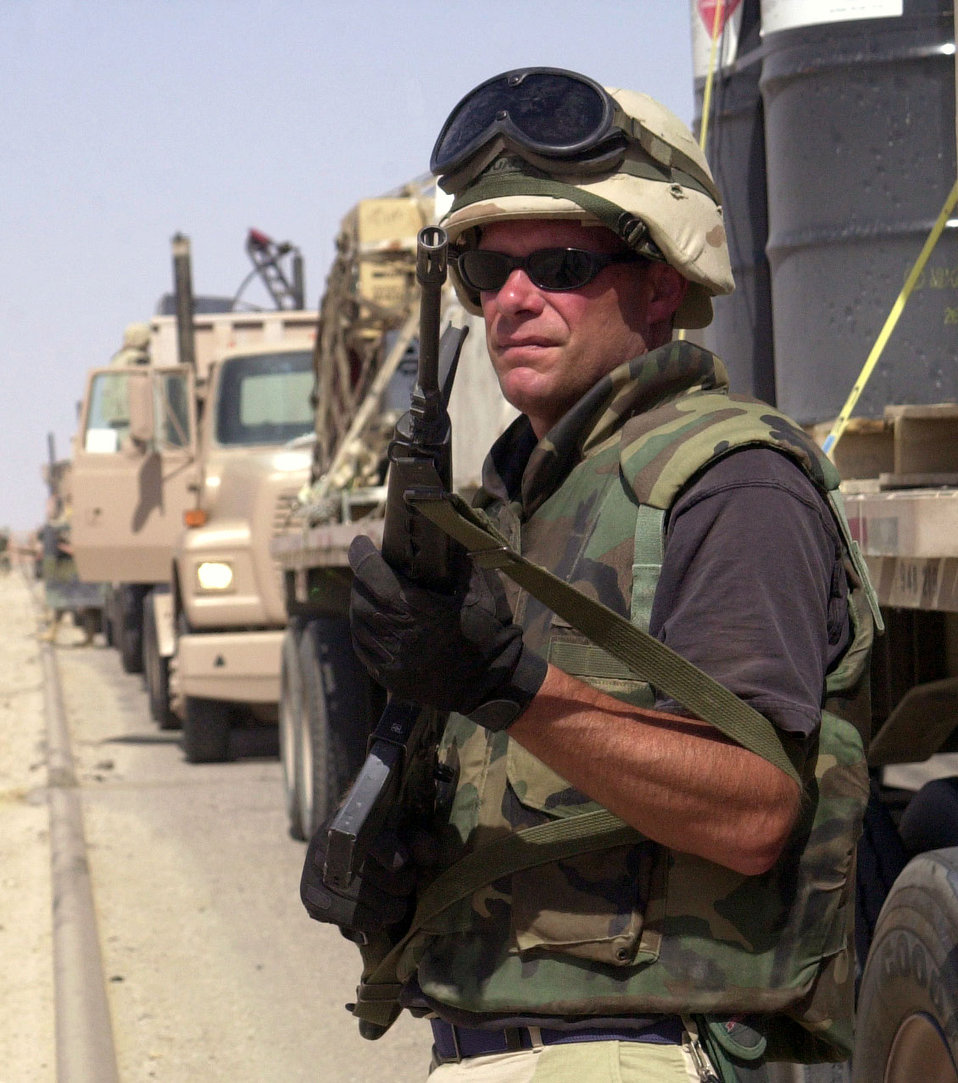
Riding shotgun

OPERATION IRAQI FREEDOM (AFPN) -- Staff Sgt. David Countie helps form a security perimeter around the trucks of the Red Tail Express recently. The express delivers supplies to servicemembers at forward-deployed locations. When the vehicles stop, people riding shotgun set up the perimeter to deter aggressors while the drivers check their cargo. Countie is assigned to the 332nd Vehicle Operations Squadron.